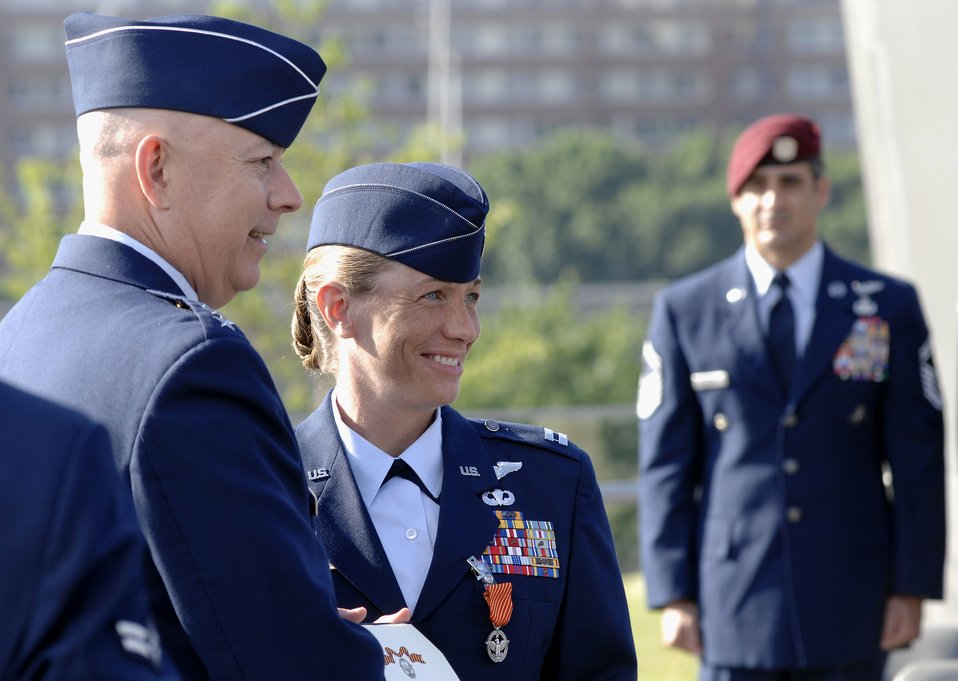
Air Force Combat Action Medal

Air Force Chief of Staff Gen. T. Michael Moseley presents Capt. Allison Black of the 1st Special Operations Squadron, with the Air Force Combat Action Medal as Senior Master Sgt. Ramon Colon-Lopez stands at attention. Six Airmen received the medal in a ceremony June 12 at the Air Force Memorial in Arlington, Va.